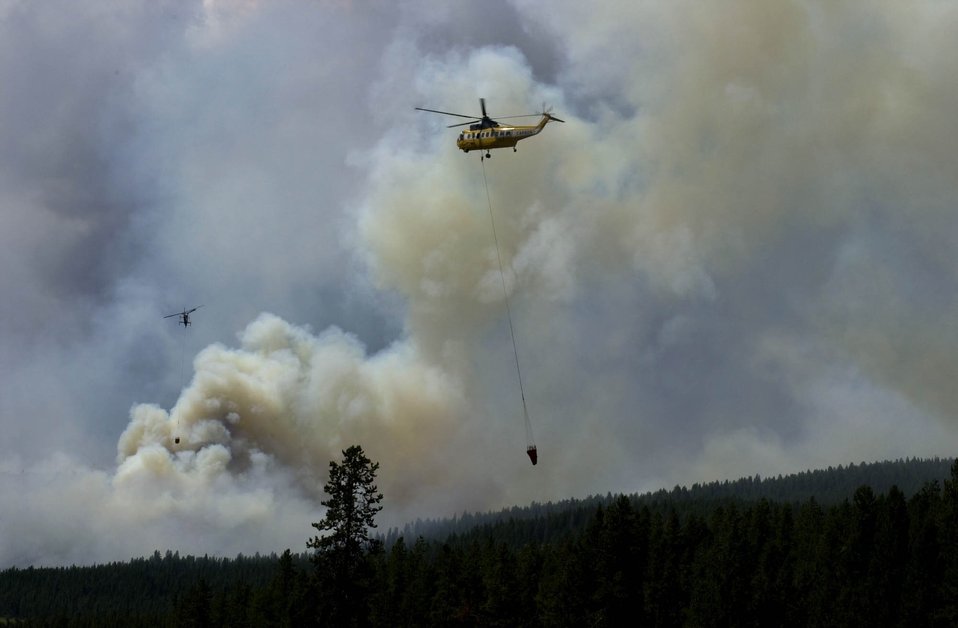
Helicopter drops Fire Clearwater Fire Salmon Field Office USRD Upper Snake River District